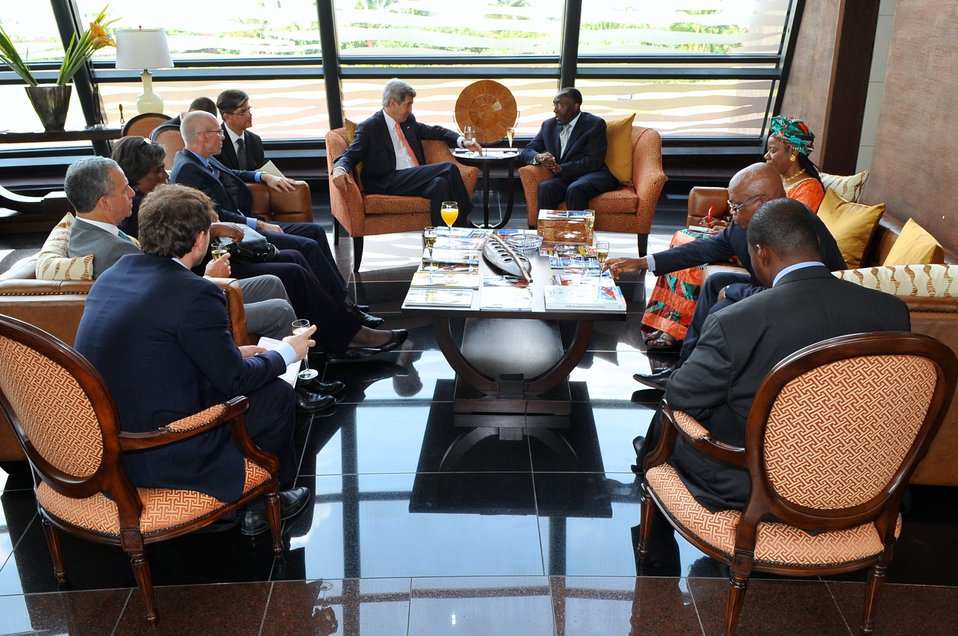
Secretary Kerry, Democratic Republic of Congo Foreign Minister Tshibanda Meet in Kinshasa

U.S. Secretary of State John Kerry and Democratic Republic of Congo Foreign Minister Raymond Tshibanda, flanked by their respective staffs, meet in Kinshasa on May 3, 2014.